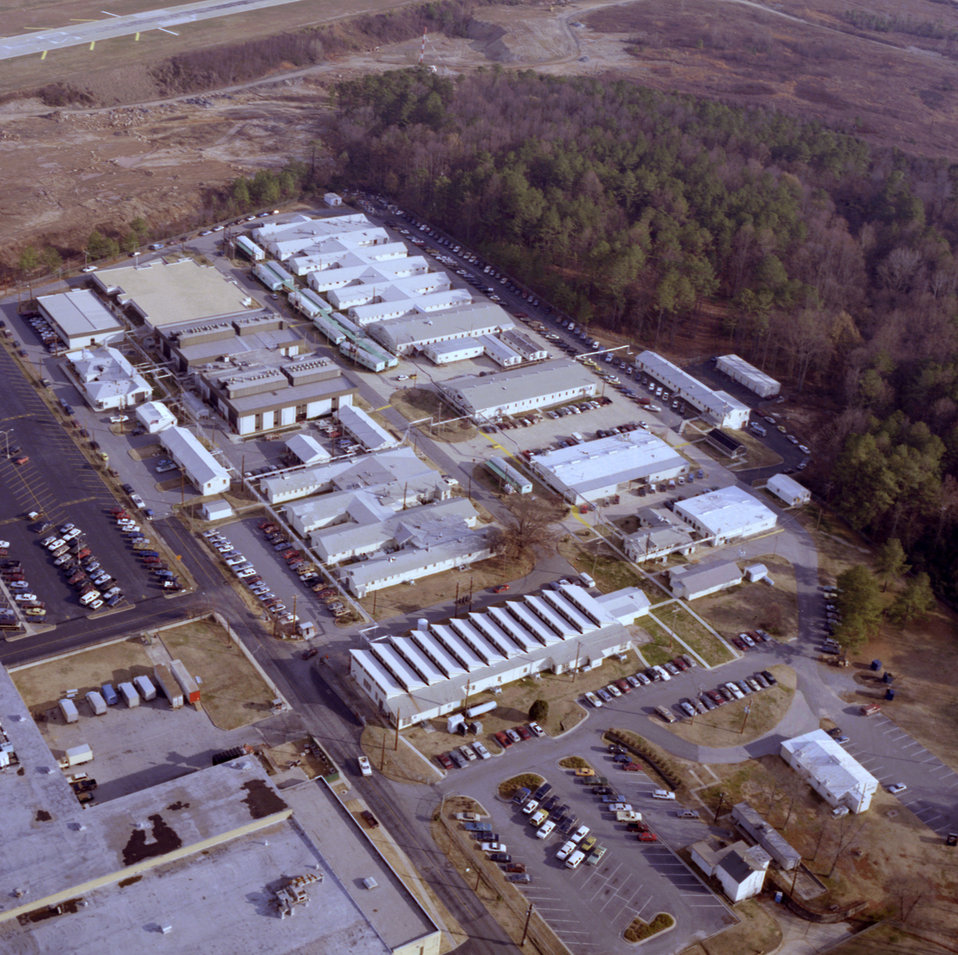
From an aerial perspective, this 1988 photograph depicted the Centers for Disease Control's Chamblee, Georgia campus.